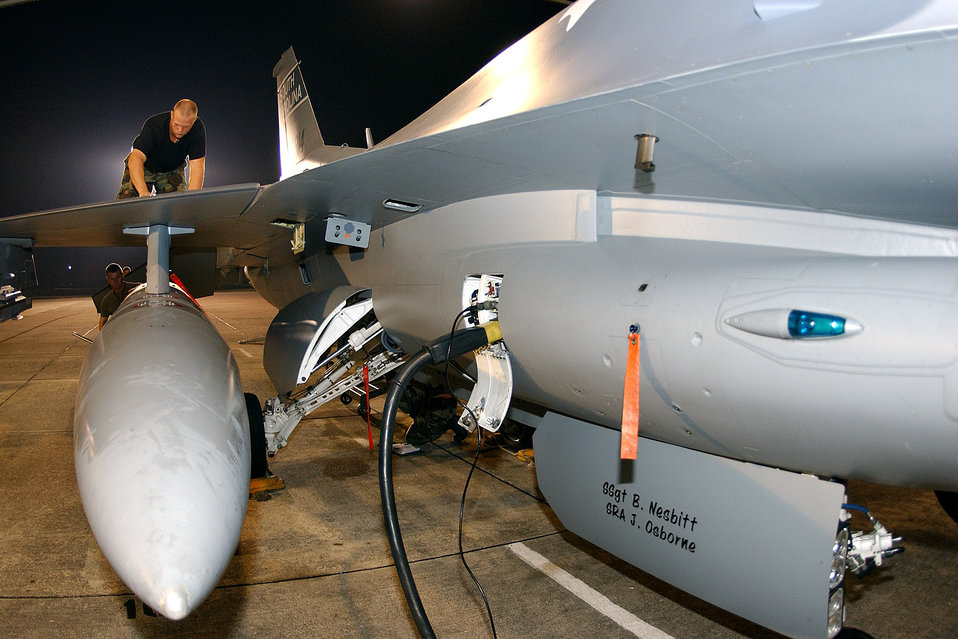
Everything's ship-shape

Crew chief Senior Airman Gary Riddle checks over an F-16 Fighting Falcon Sept. 12 prior to a flight. Airmen from the South Carolina Air National Guard's 169th Fighter Wing at McEntire Joint National Guard Base were preparing for an upcoming operational readiness exercise.